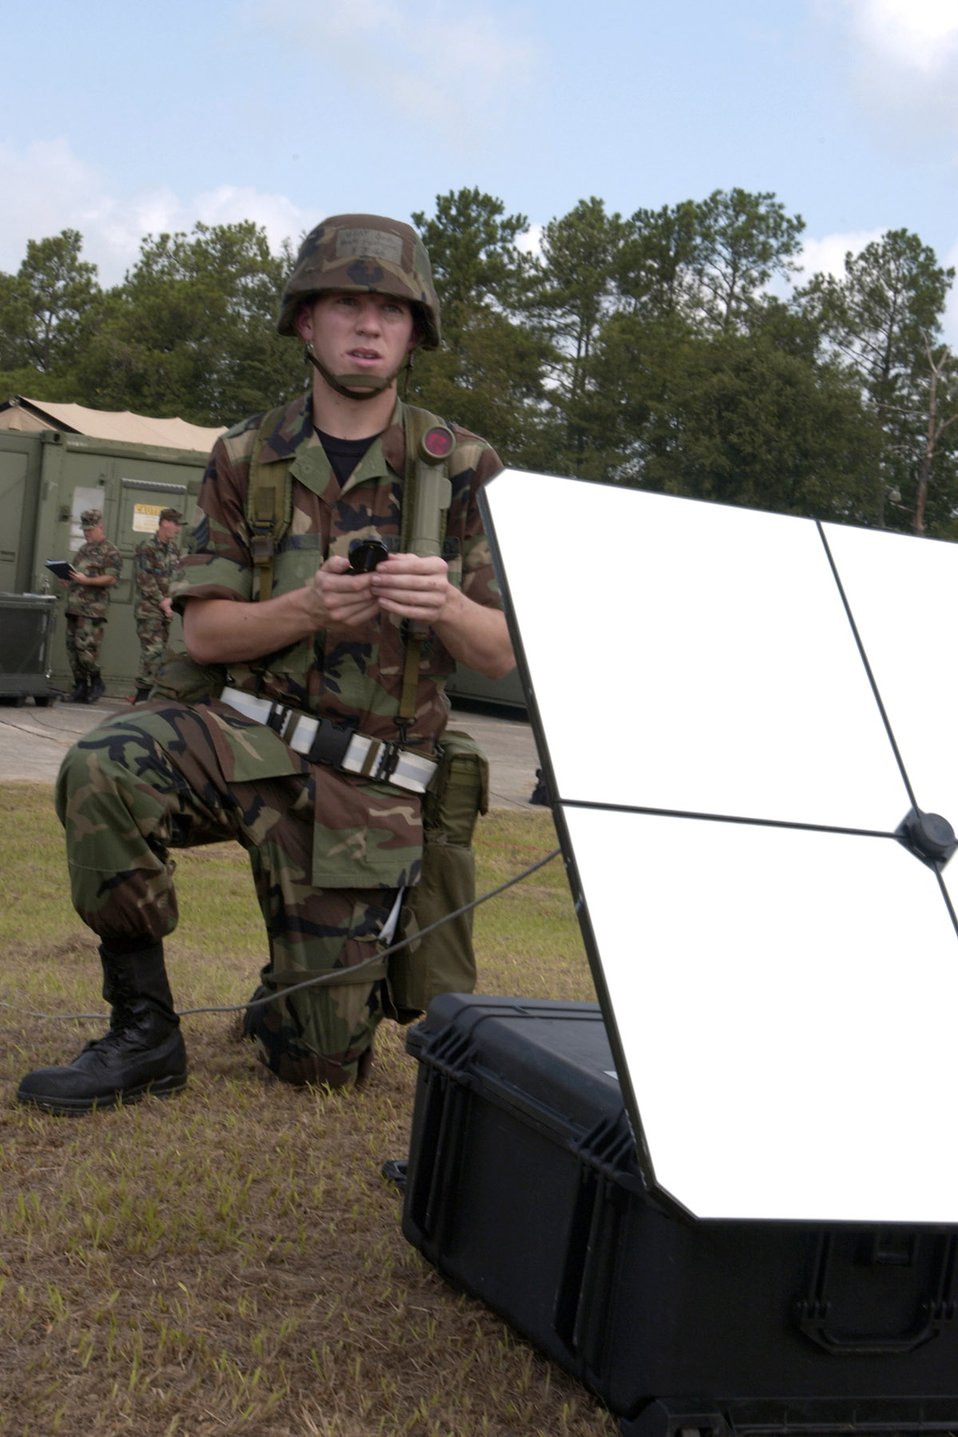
Inspection ready

Senior Airman Brett Fonteyne Jr. is evaluated on the set-up and successful operation of a mobile radio satellite phone Aug. 19. The one-hour timed scenario requires Airmen to successfully call-back and send data to